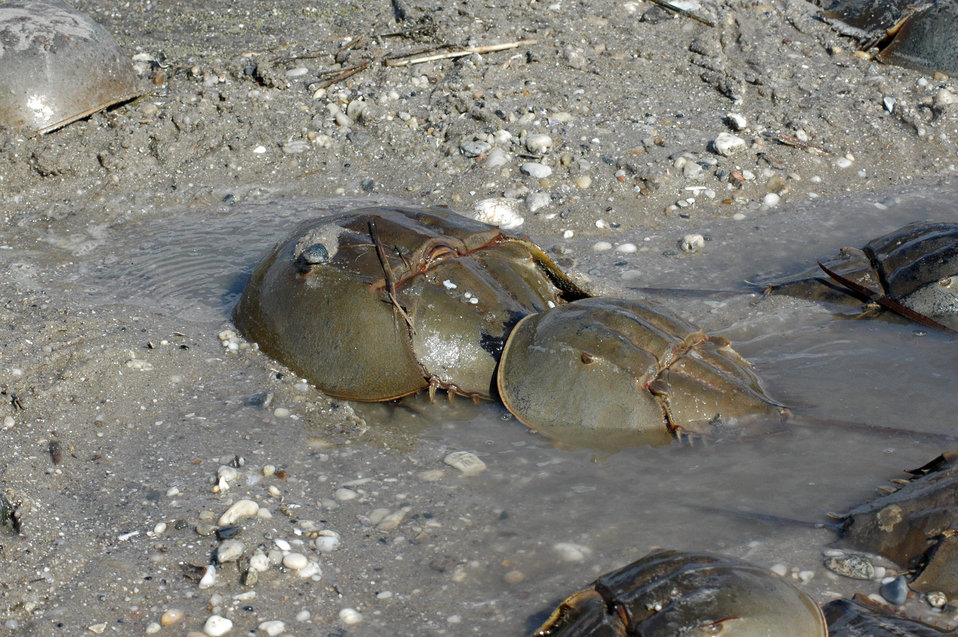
Mating pair - Horseshoe crabs

Mispillion Harbor, Delaware.